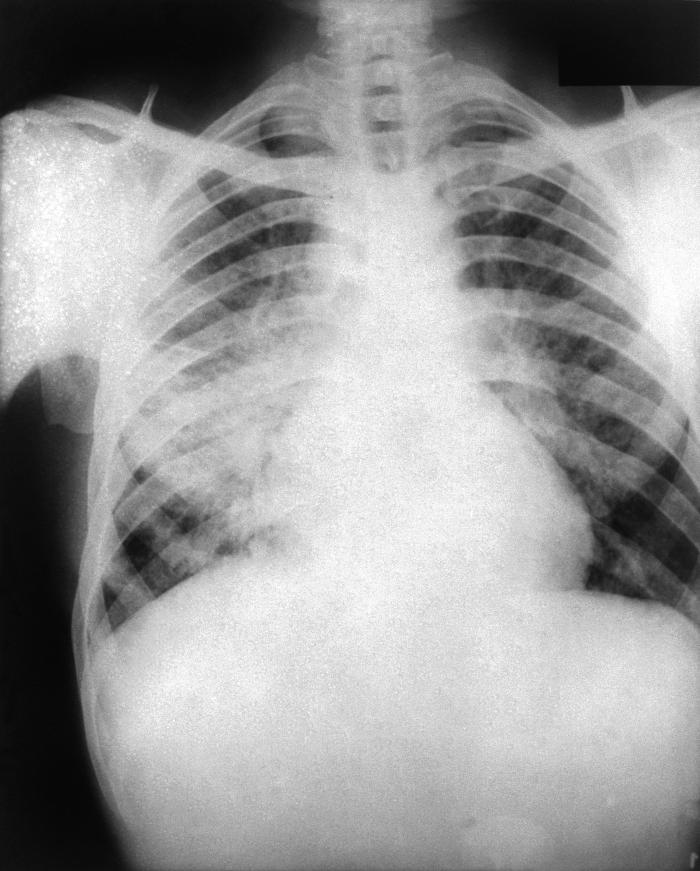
This 1961 plane film x-ray revealed an enlarged mediastinum, diffuse parenchymal nodularity with more significant involvement of the right lower lobe. The etiologic nature of this condition is unknown.